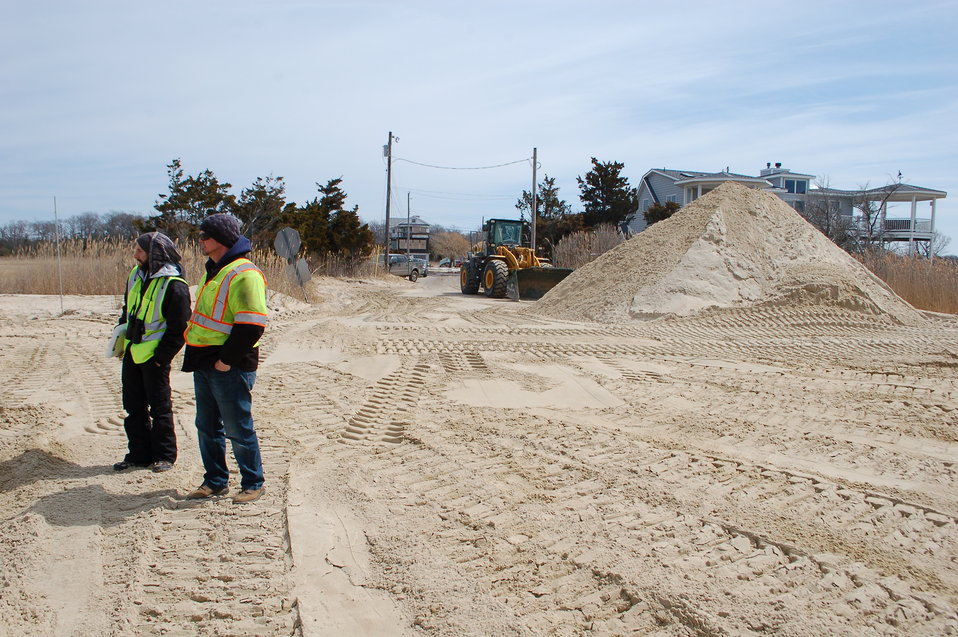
Kimbles Beach-8

USFWS oversees beach restoration on New Jersey's Delaware Bay.